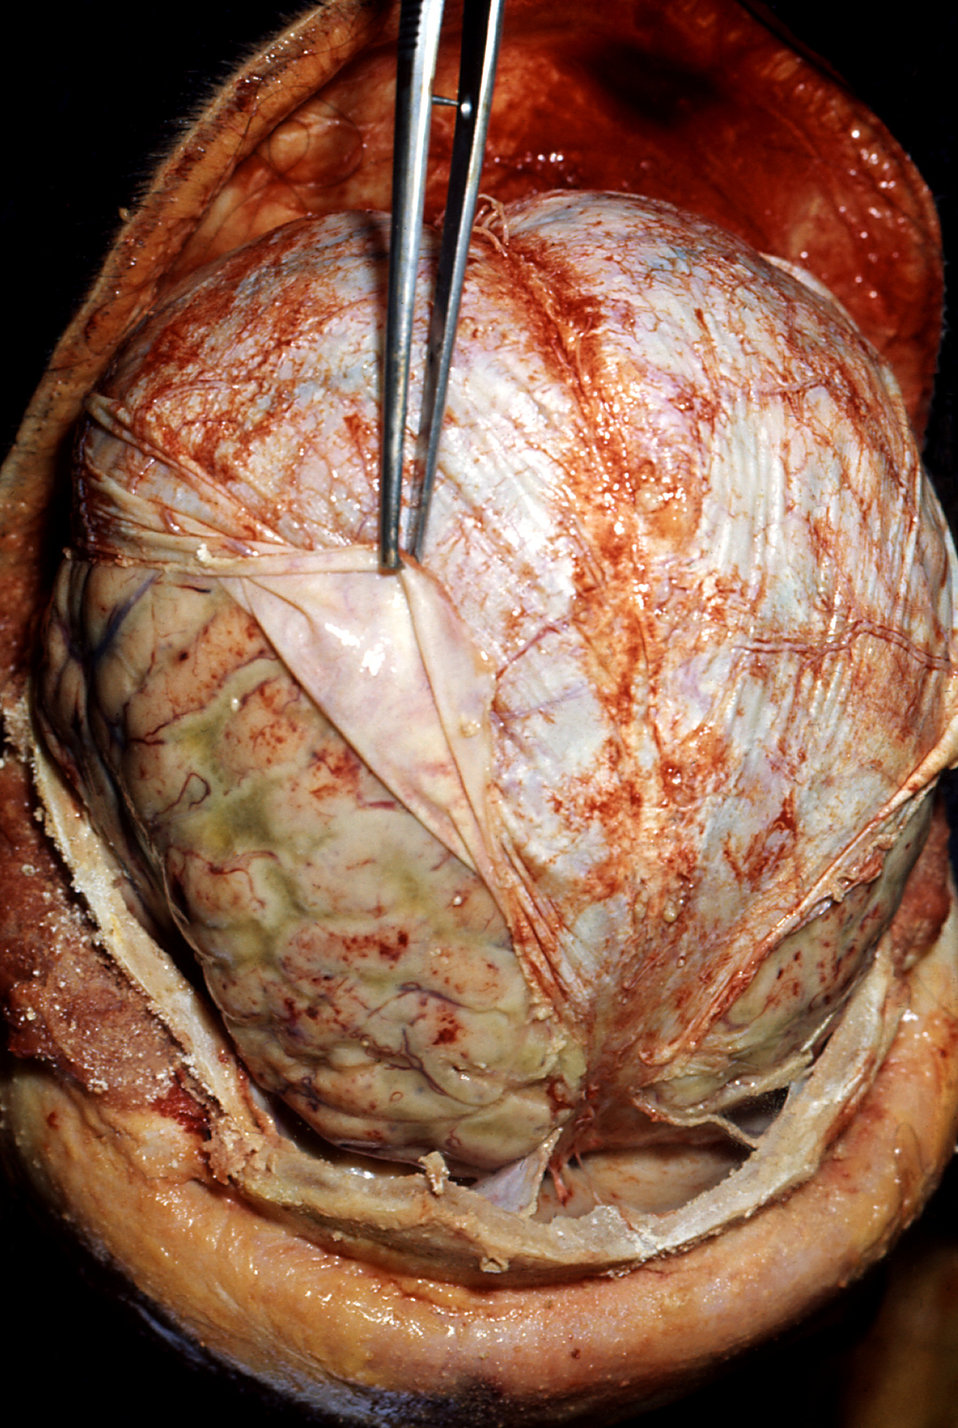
Pneumococcal meningitis in an alcoholic patient.